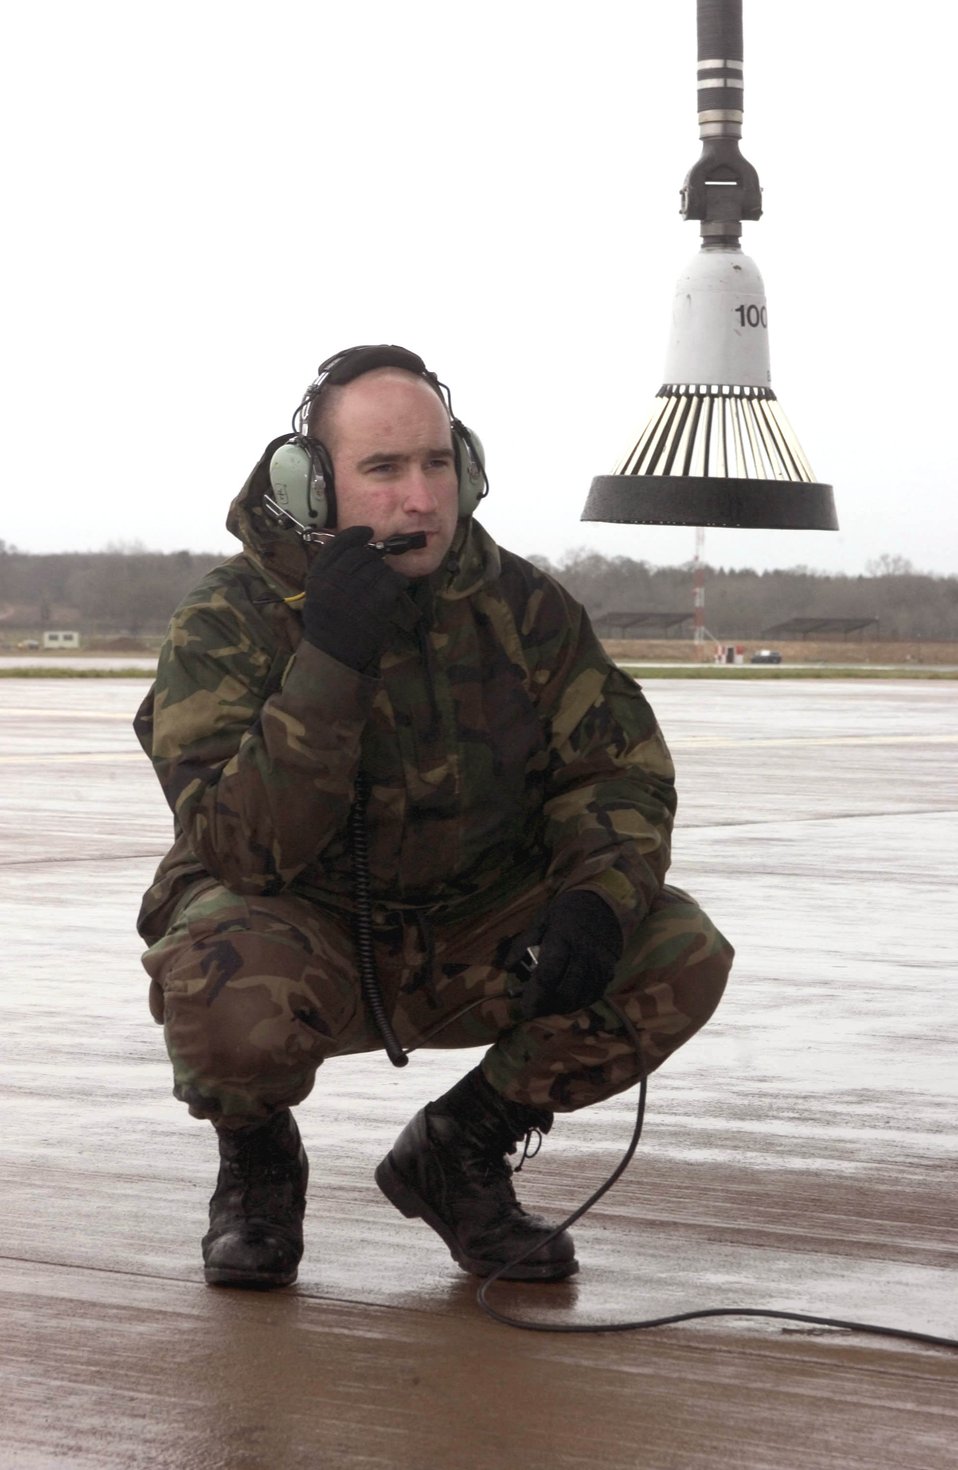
Flying out of Fairford

ROYAL AIR FORCE FAIRFORD, England -- Staff Sgt. Matthew Gniotczynski waits near the tail of a KC-135 Stratotanker for the aircrew to begin a flight controls check. The aircraft is from the 351st Expeditionary Air Refueling Squadron at Royal Air Force Mildenhall. The 351st EARS will fly out of the airstrip here while Mildenhall's runway is under construction. Sergeant Gniotczynski is a crew chief with the 351st Expeditionary Maintenance Squadron.